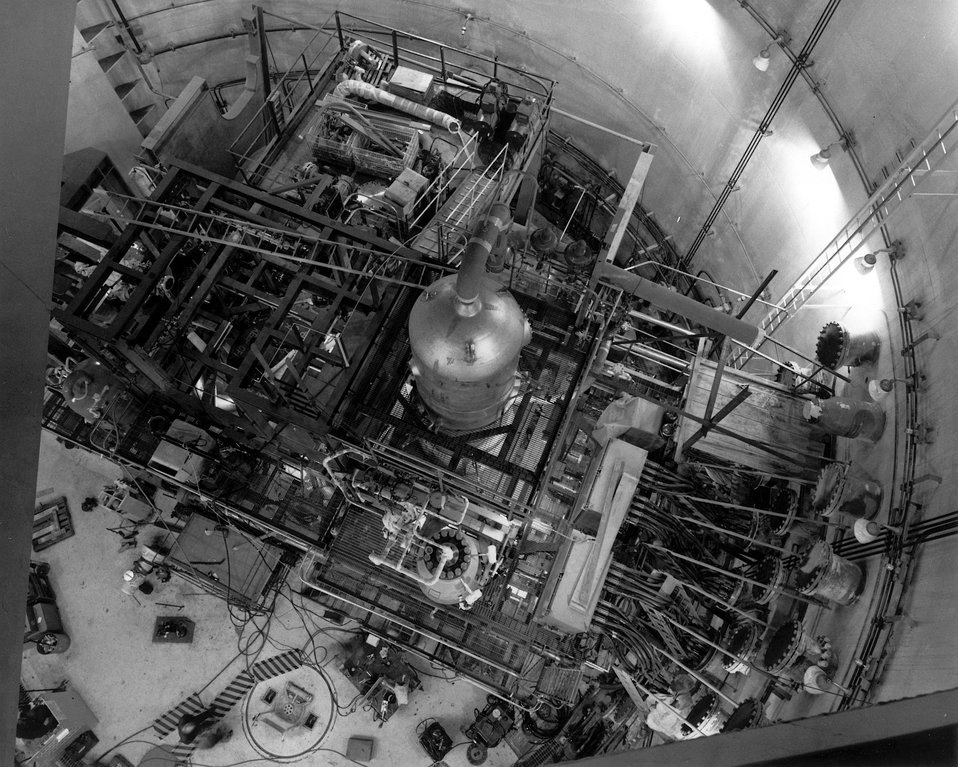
The mobile test assembly inside the Loss of Fluid Test Facility under construction at the Energy Research and Development Administration's Idaho National Engineering Laboratory. Circa 1975.